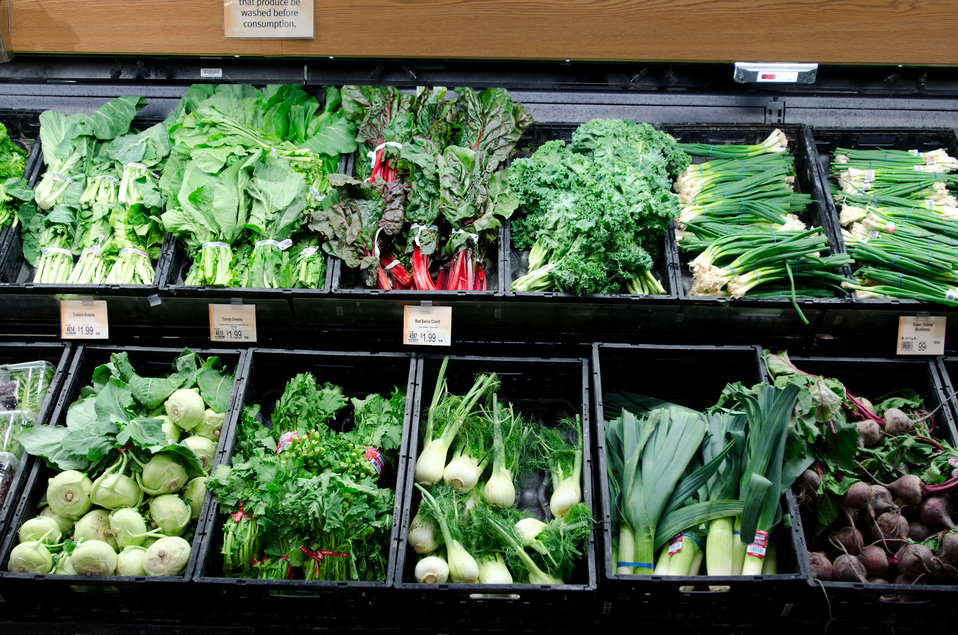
Produce at a grocery store in Fairfax, Virginia, on March 3, 2011.